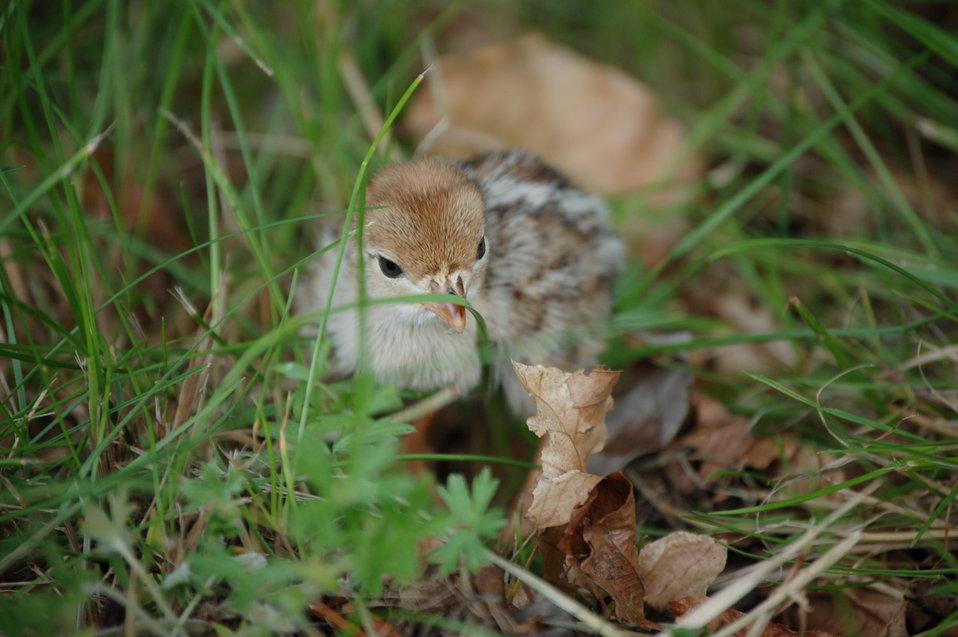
Young-Alectoris-rufa